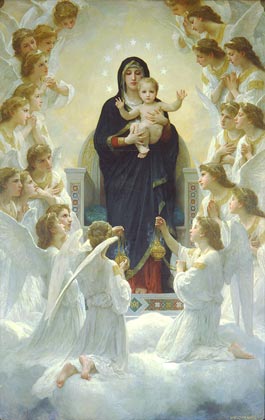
Bouguereau, William-Adolphe - The Queen of the Angels (Regina Angelorum)